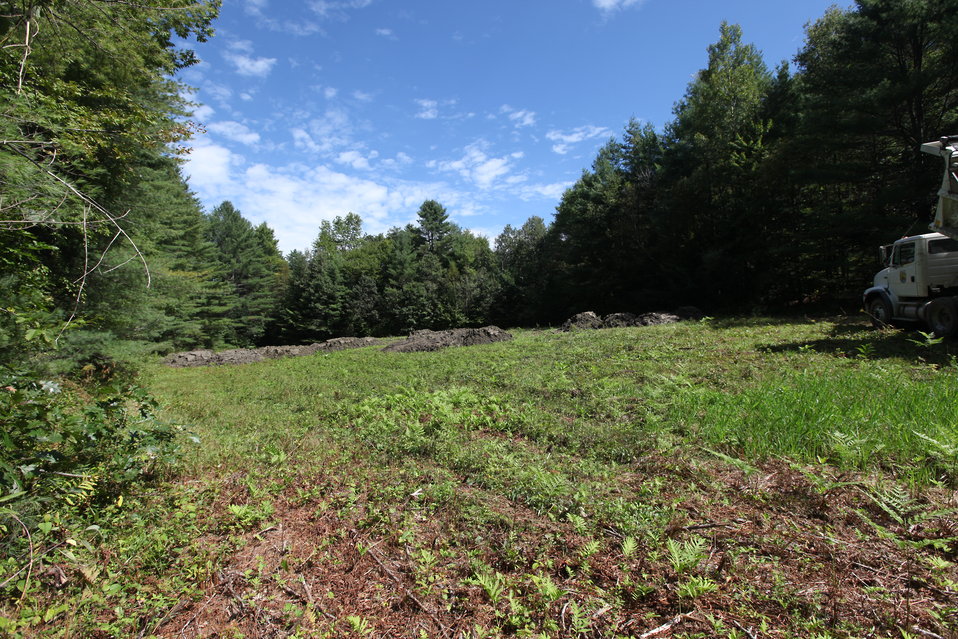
Storm damage relief at White River NFH

Clean-up of mud and silt deposited during the flood.